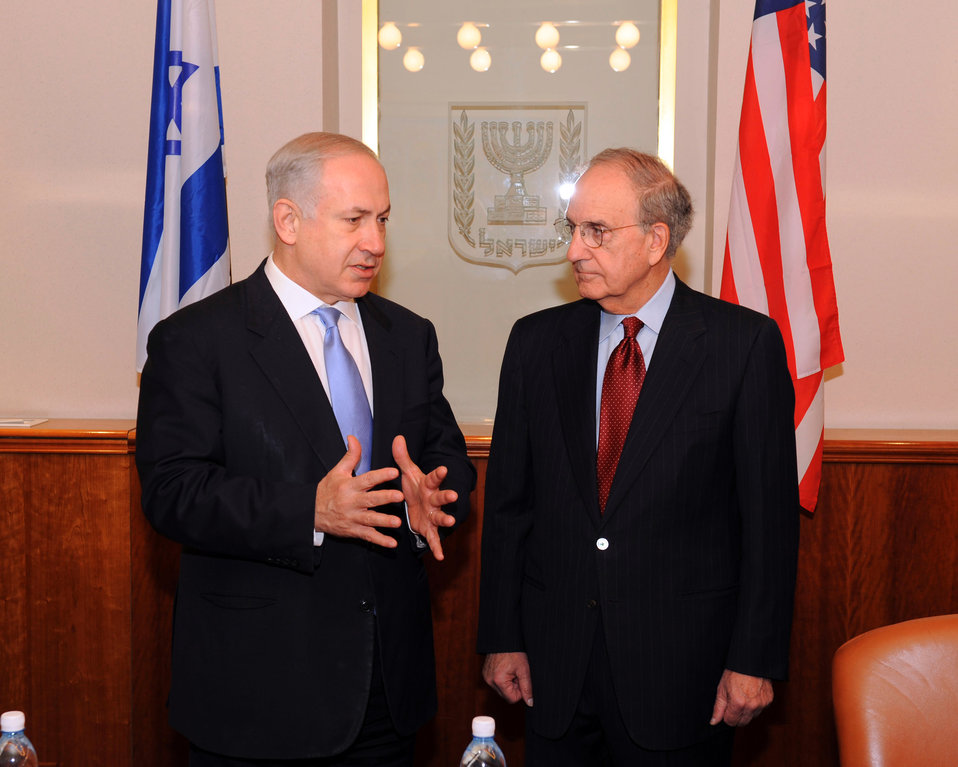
Special Envoy Mitchell Meets With Israeli Prime Minister

U.S. Special Envoy to the Middle East George J. Mitchell meeting with Israeli Prime Minister Benjamin Netanyahu at the Prime Minister's Office in Jerusalem, October 30, 2009.